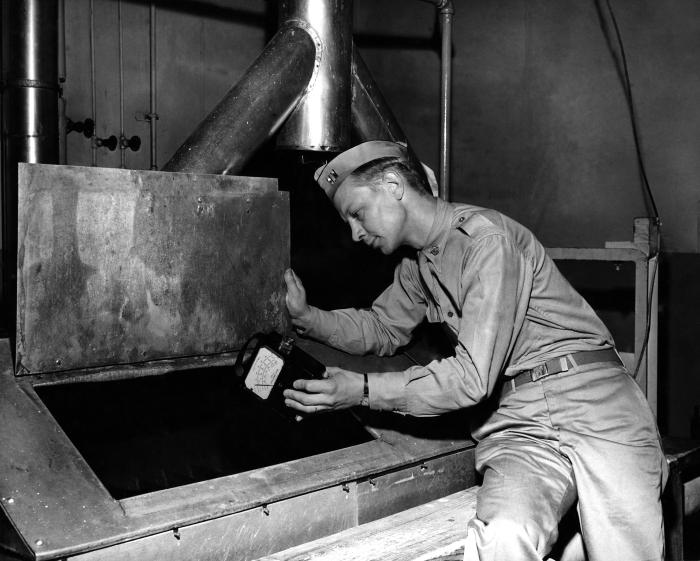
This historical 1943 image, which was provided by the Center for Disease Control's (CDC), National Institute for Occupational Safety and Health (NIOSH), depicted a Public Health Service (PHS) officer in the process of an using industrial hygiene air-sampling machine, in order to determine the airborne concentrations of the explosive TNT (trinitrotoluene) inside an Ohio military ordnance plant. A poisonous chemical, TNT will irritate the skin upon contact, and actually will change the skin's color to a bright yellow-orange. Prolonged exposure leads to liver damage, anemia, enlargement of the spleen, and a compromised immune system, to name a few of its negative effects. Trinitrotoluene is also a known carcinogen.